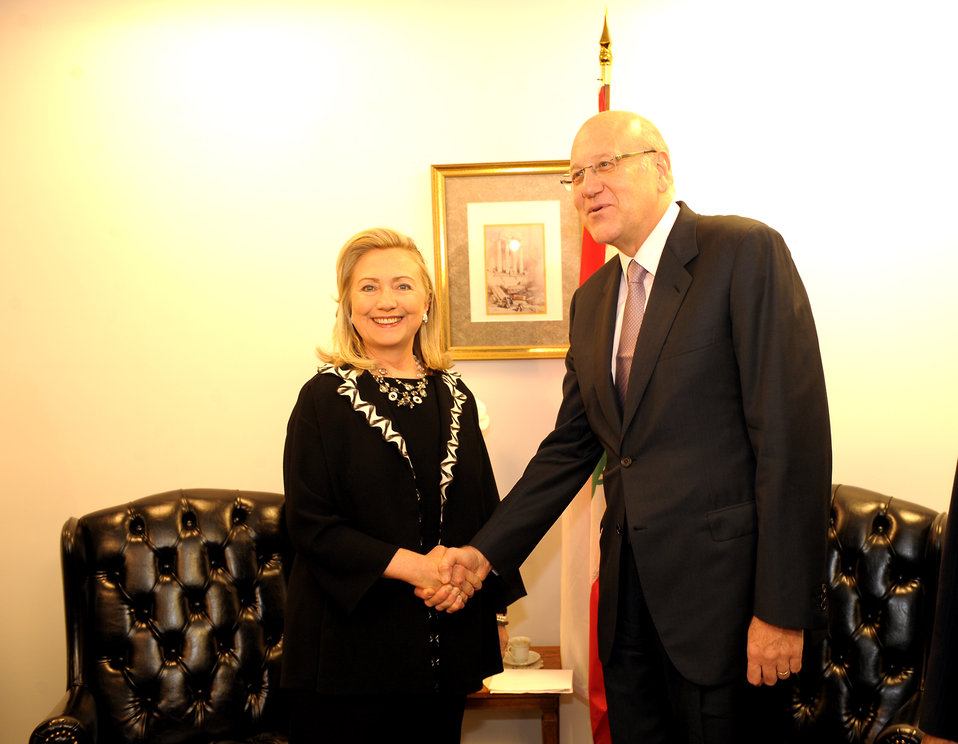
Secretary Clinton Meets With Lebanese Prime Minister Najib Mikati

U.S. Secretary of State Hillary Rodham Clinton meets with Lebanese Prime Minister Najib Mikati in New York, New York, on September 26, 2011.